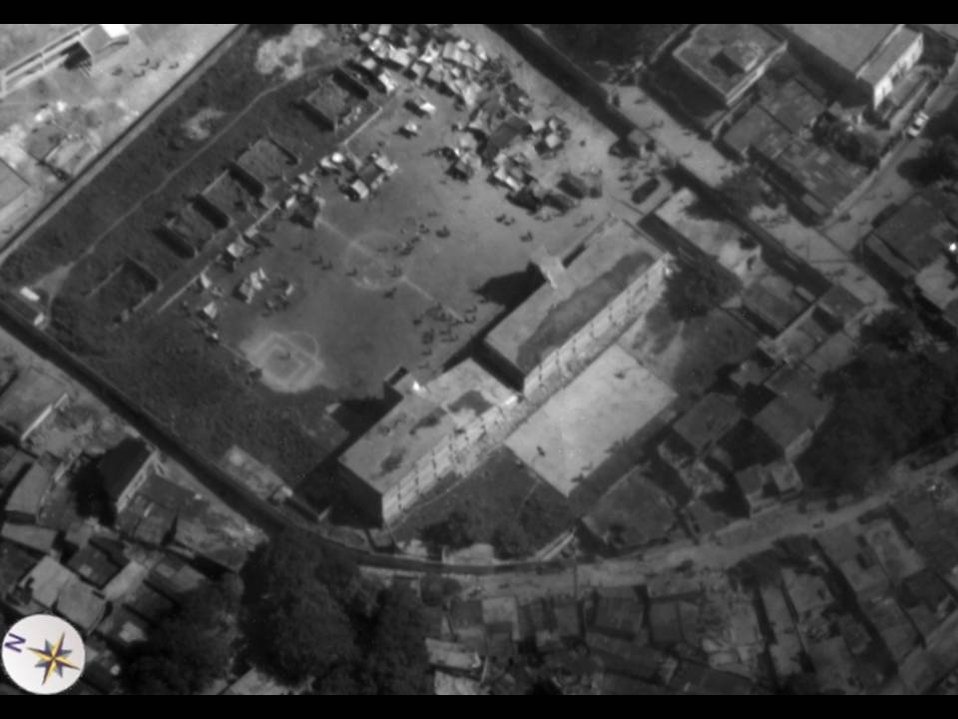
Global Hawk over Haiti

An aerial view of earthquake victims gathering in a soccer field in Haiti from an Air Force Global Hawk unmanned aircraft Jan. 14. Aerial images are providing planners valuable situation awareness as they coordinate U.S. military support to the Haiti relief effort.